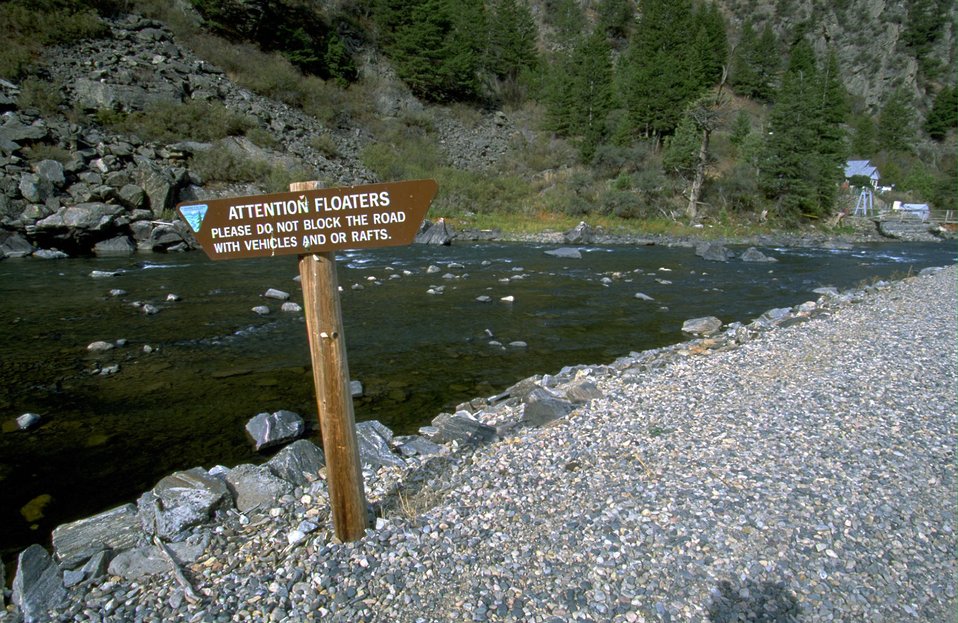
Fall Creek Recreation Sign